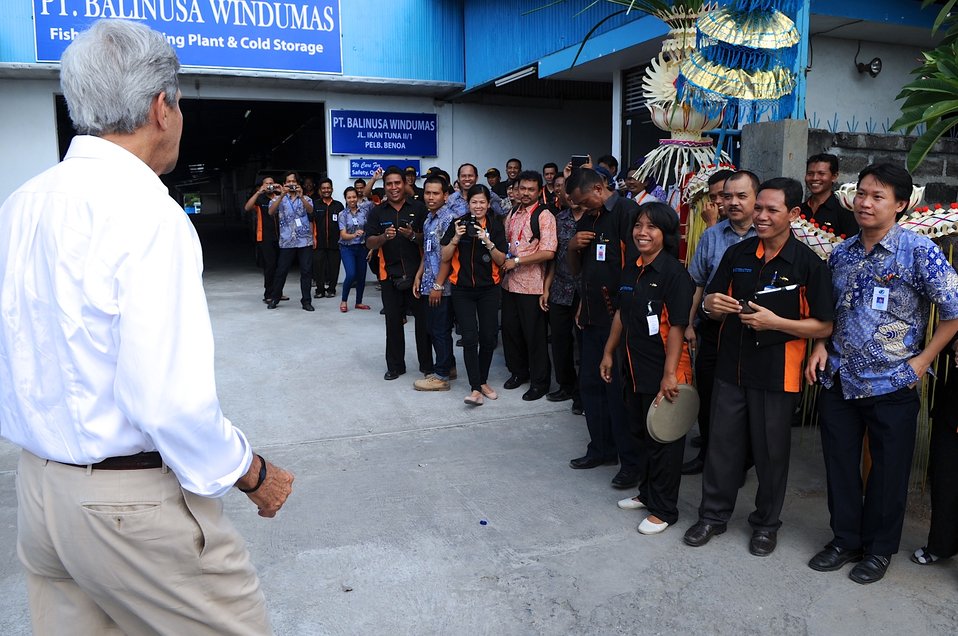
Secretary Kerry Greets Fish Processors at Benoa Port in Indonesia

U.S. Secretary of State John Kerry greets workers who process tuna caught under a USAID-supported sustainable fishing program in Bali, Indonesia on October 6, 2013.